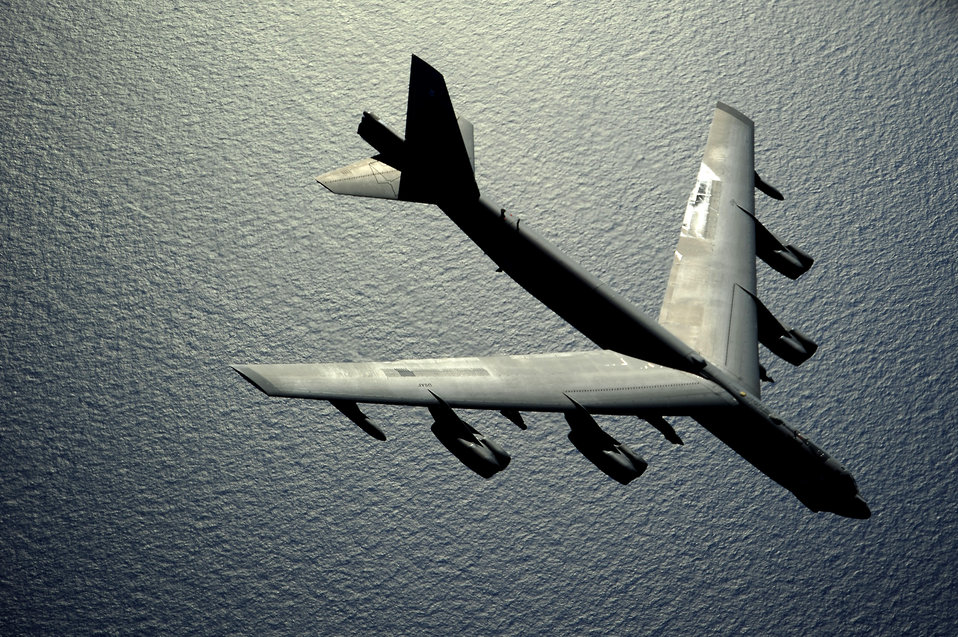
Bomber support

A B-52 Stratofortress flies over the Pacific Ocean after an air refueling during the Rim of the Pacific exercise July 10, 2010. RIMPAC is a biennial, multinational exercise designed to strengthen regional partnerships and improve interoperability. The B-52 is from the 20th Bomb Squadron at Barksdale Air Force Base, La.